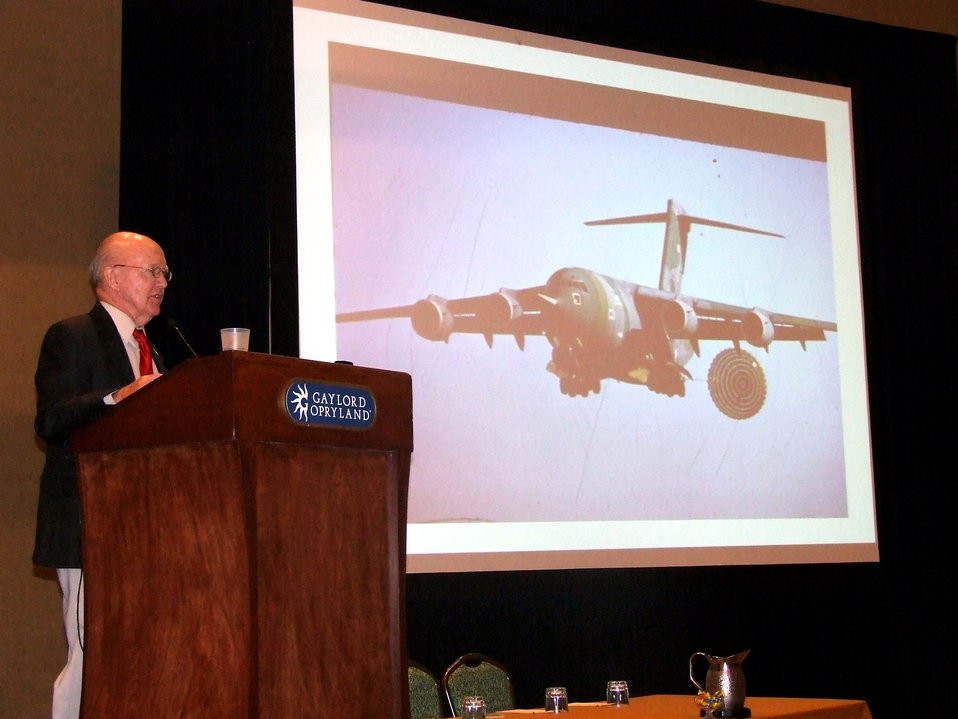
Remembering 60-plus years of airlift, tankers

Retired Chief Master Sgt. Bill Cannon presents